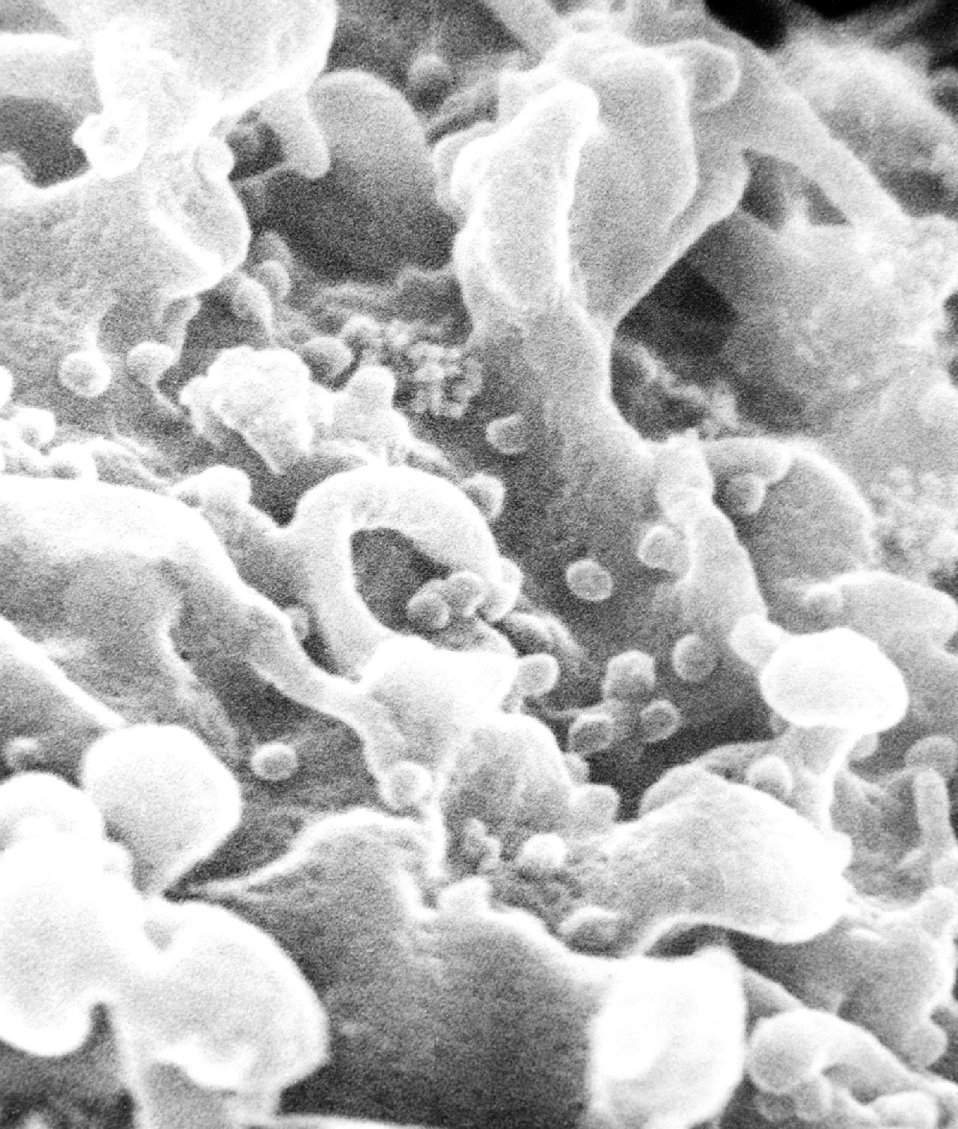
Scanning electron micrograph of human immunodeficiency virus (HIV), grown in cultured lymphocytes.